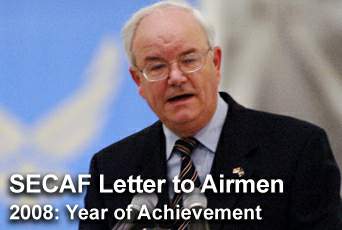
Secretary Michael Wynne

In the latest Letter to Airmen, Secretary of the Air Force Michael W. Wynne discusses personal and organizational goals, making 2008 the year of achievement for the Air Force.